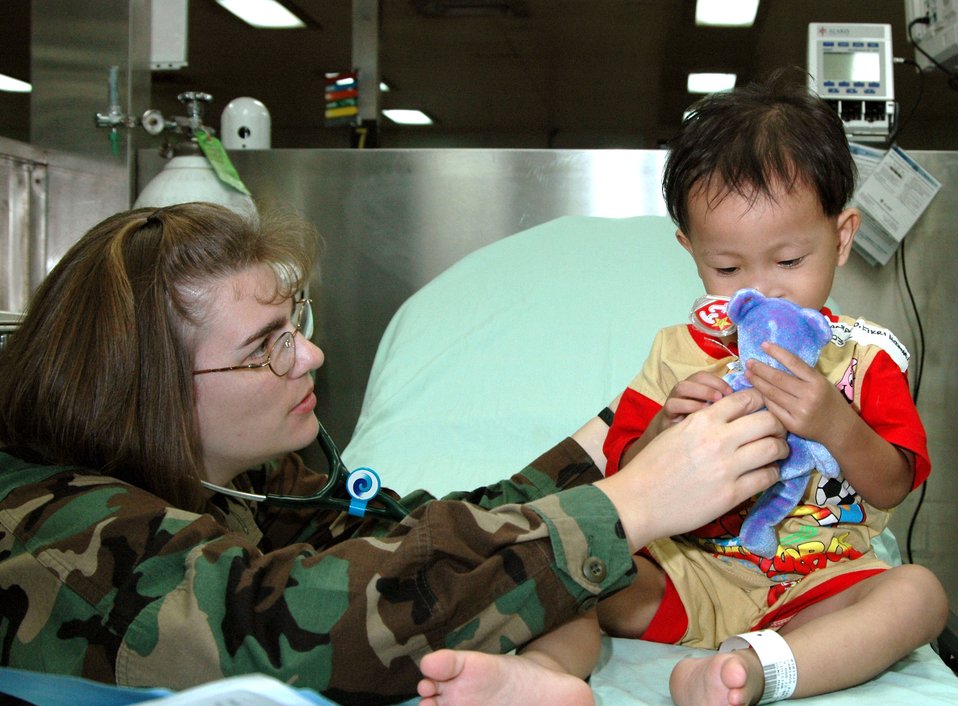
Aboard the USNS Mercy

Maj. Gretchen Black presents a gift to a young patient aboard the U.S. Navy hospital ship USNS Mercy while at a stop in Nias Island, Indonesia, on July 17. The Mercy is in the third month of a scheduled five-month deployment, conducting humanitarian and civic assistance in South and Southeast Asia and the Pacific Islands. Major Black is one of several Air Force medical professionals on the ship.